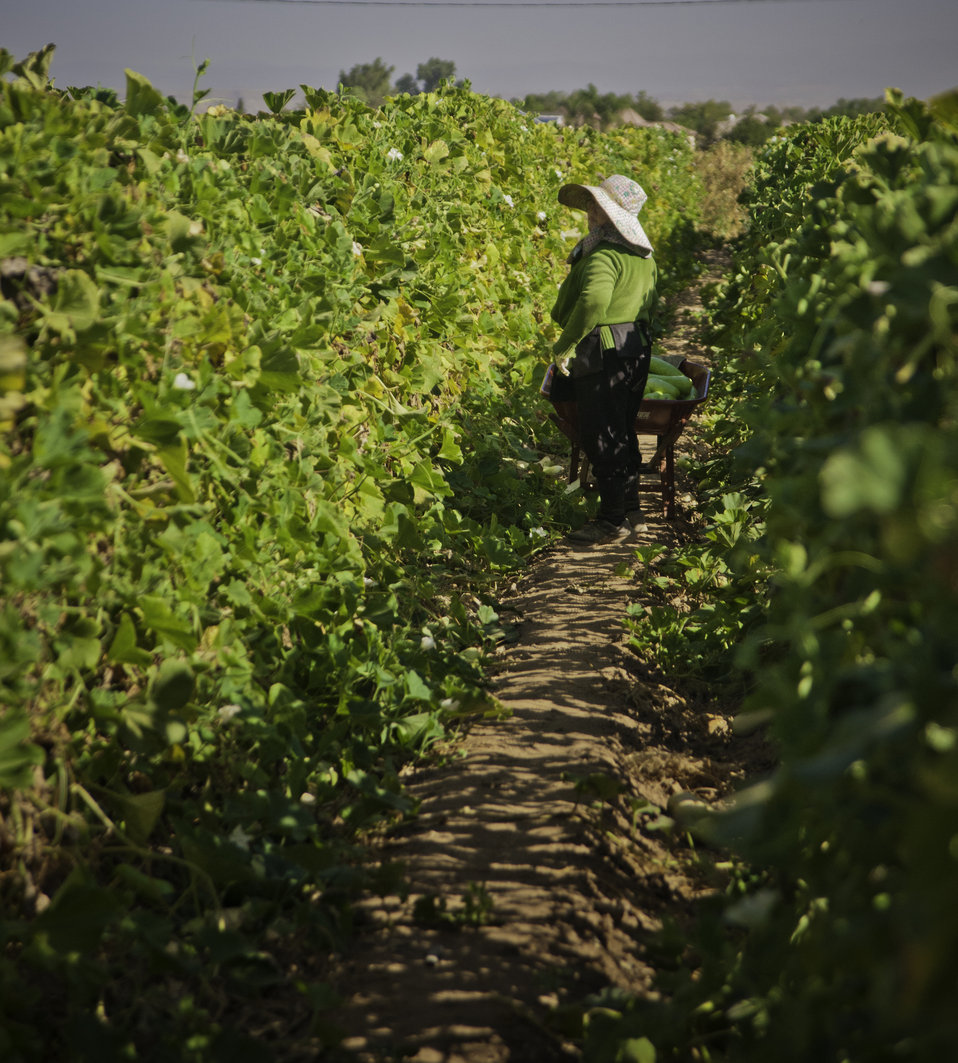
Migrant Farm Workers in California on Thursday, August 29, 2013.